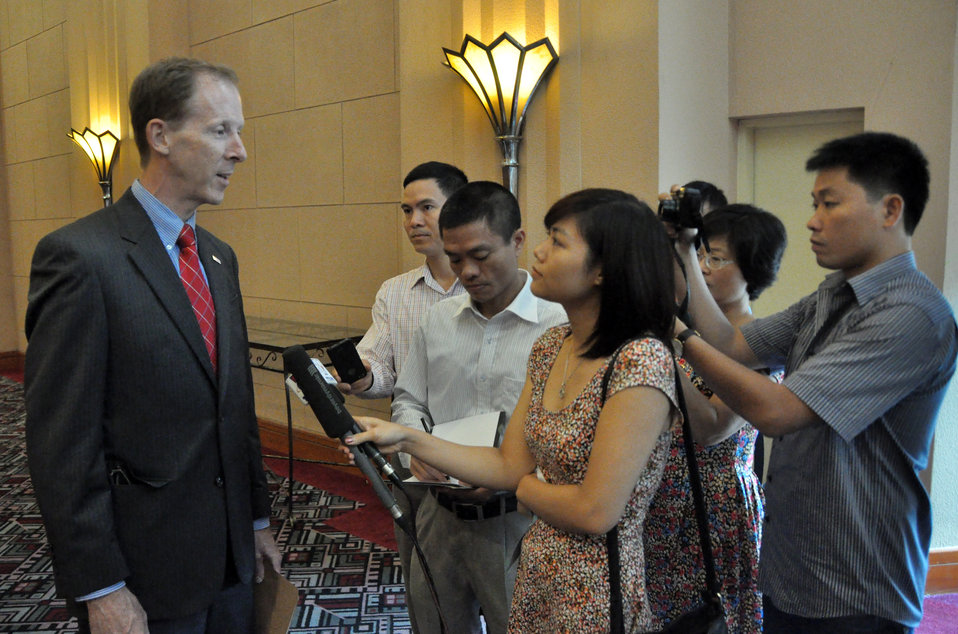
USAID Mission Director Joakim Parker speaks to journalists at the USAID Support for Trade Acceleration Project (USAID STAR Plus) Closing Ceremony

Hanoi, August 26, 2013.